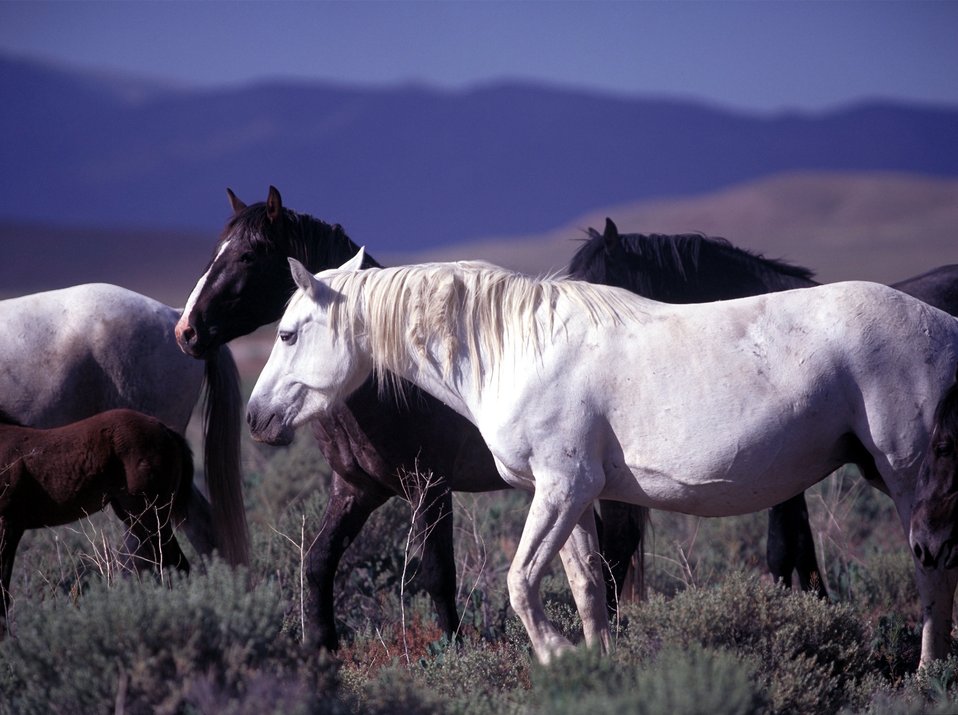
Onaqui Herd near Dugway, Utah.